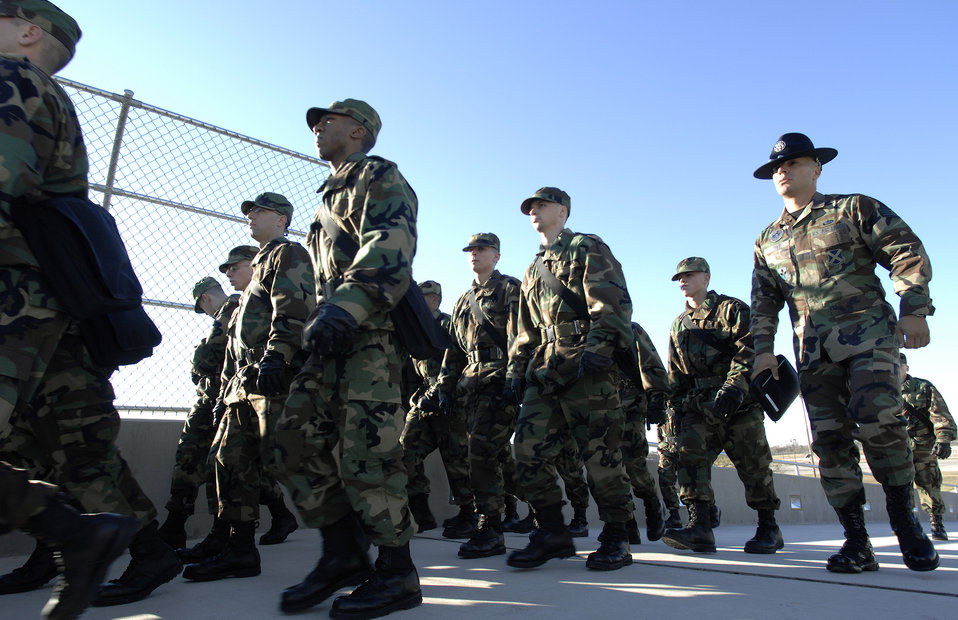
Serving through the season: Staff Sgt. Jacob Chavez

Staff Sgt. Jacob Chavez marches Flight 149 of the 322nd Training Squadron to the immunization clinic Dec. 27. Sergeant Chavez is a military training instructor at Lackland Air Force Base, Texas, and is spending his holidays training new Airmen.